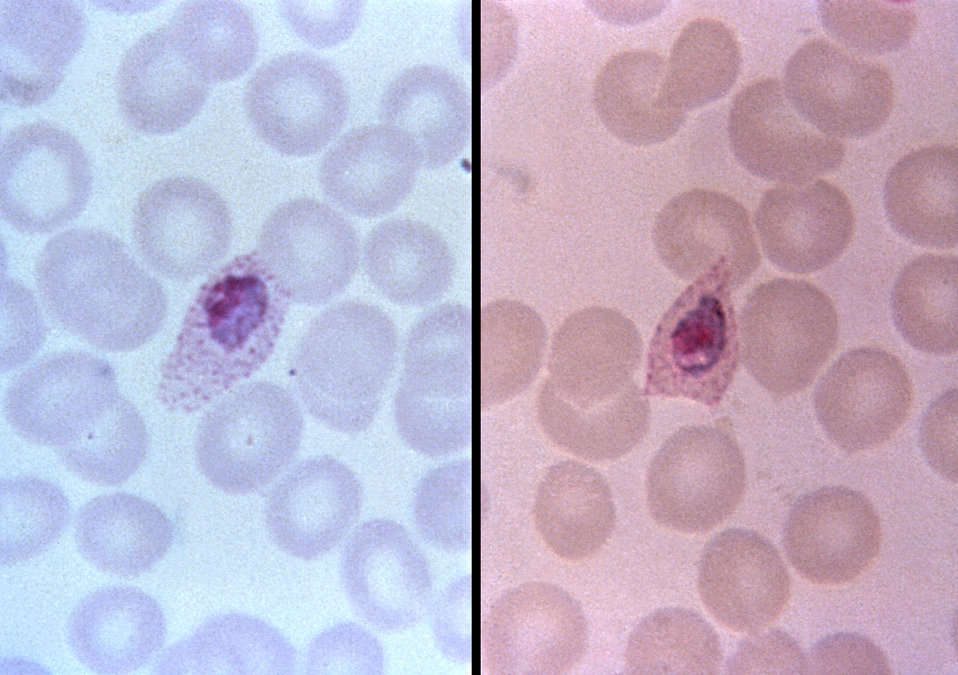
These thin film Giemsa stained micrographs reveal growing Plasmodium ovale trophozoites.